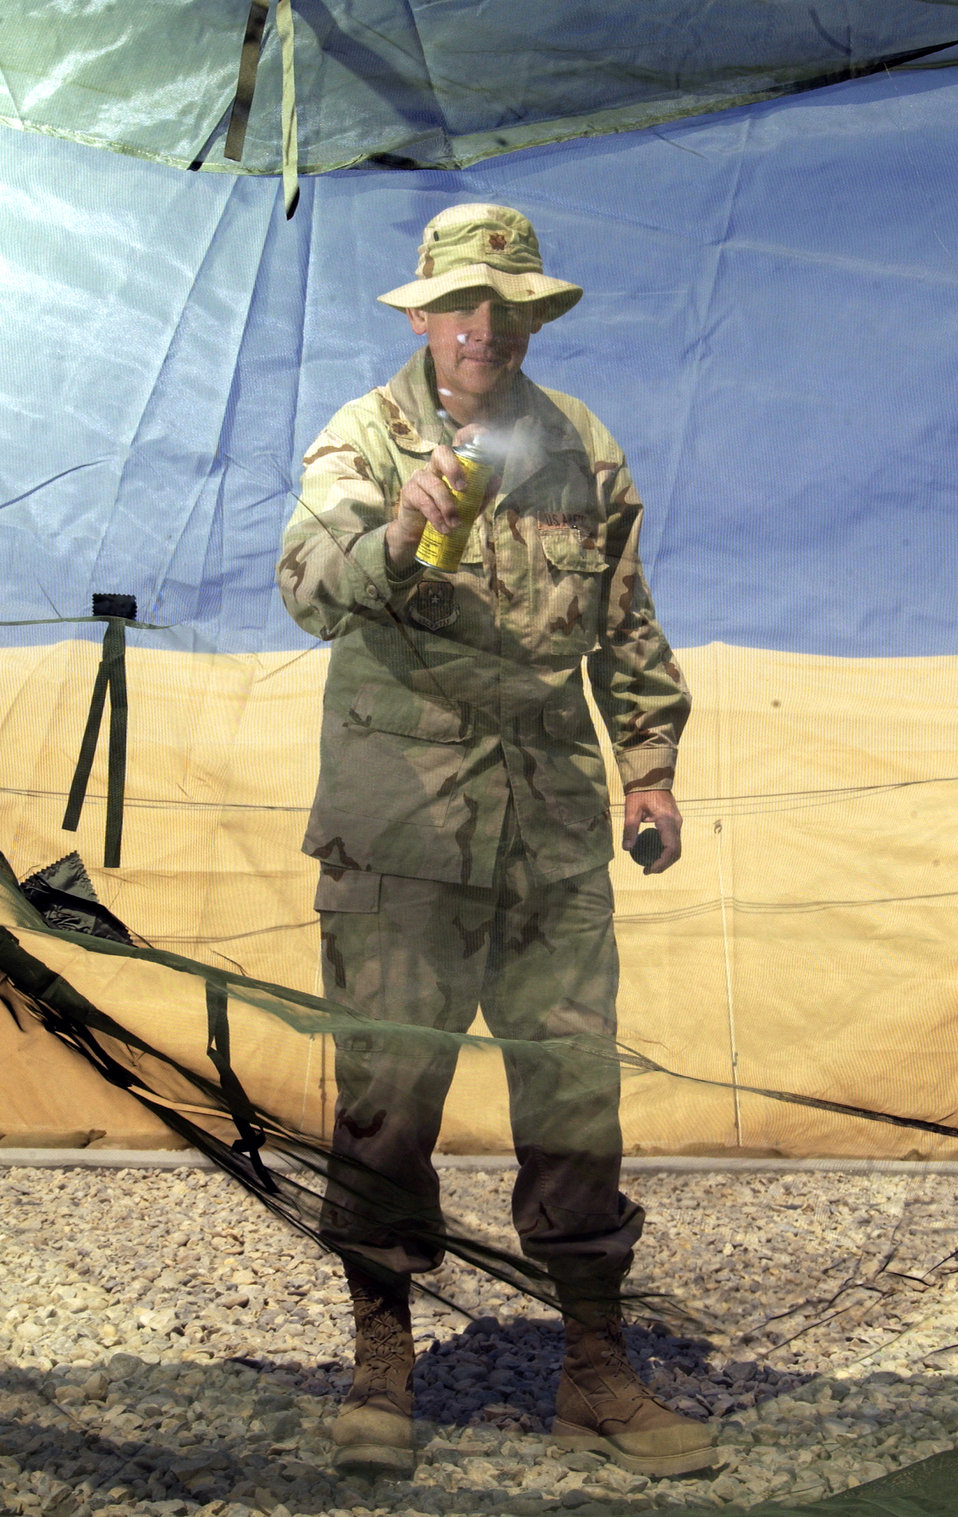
Skeeters be gone

TALLIL AIR BASE, Iraq -- Major Don Savage spot treats a mosquito net with Permethrin Arthropod Repellent here March 30. Maj. Savage is a public health officer with the 407th Expeditionary Medical Group. Public health people treat mosquito nets in order to prevent Leishmaniasis, an infectious desease spread by sand fleas and sand flies in this area.